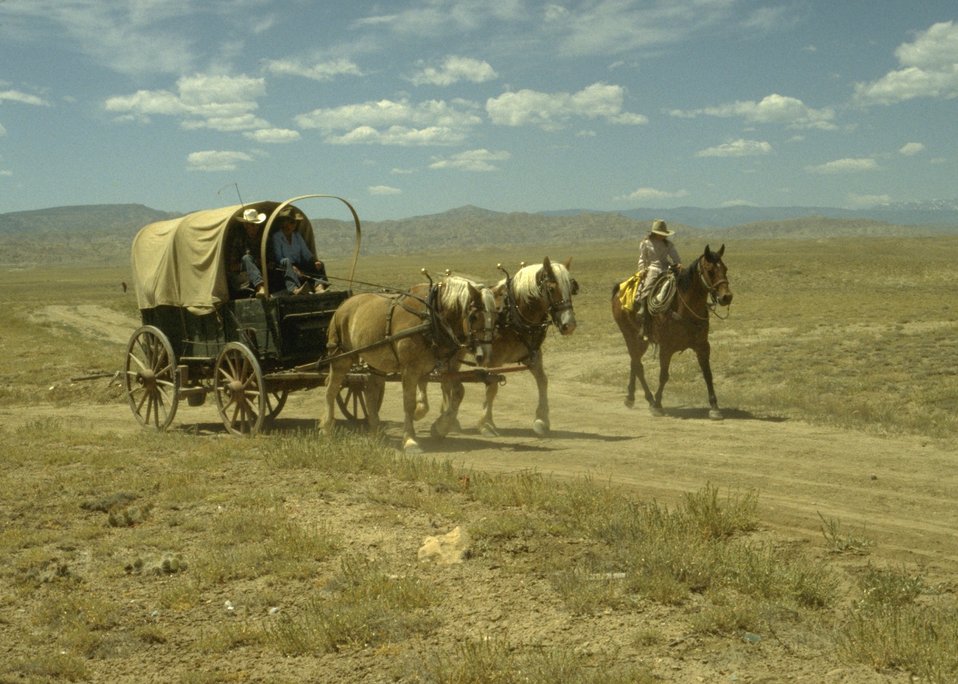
Horsedrawn wagon .